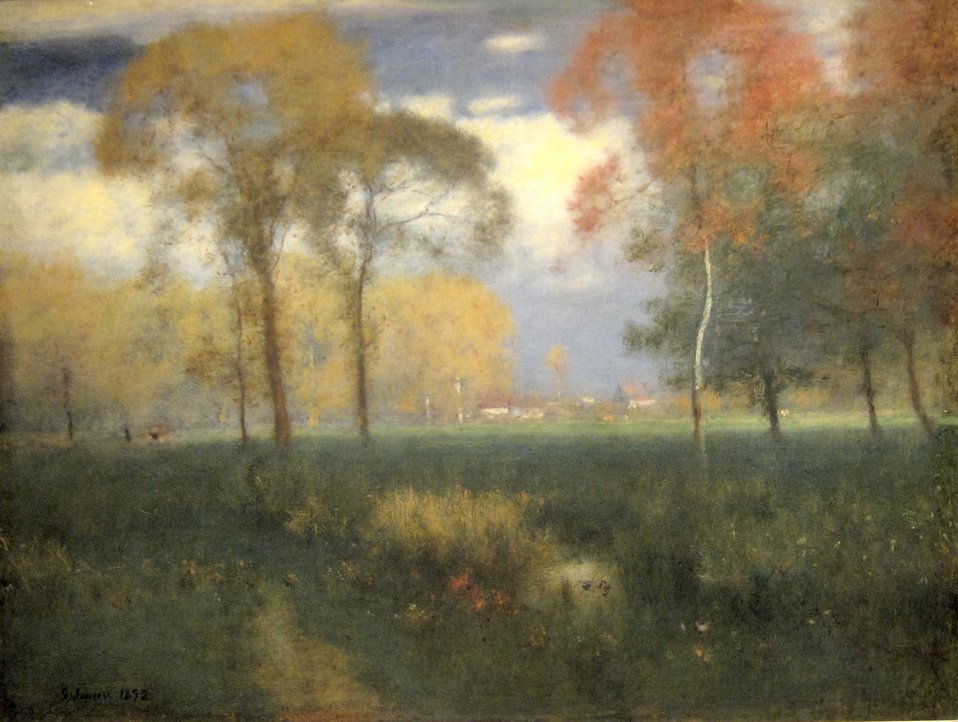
Sunny Autumn Day, oil on canvas painting by George Inness, 1892, Cleveland Museum of Art